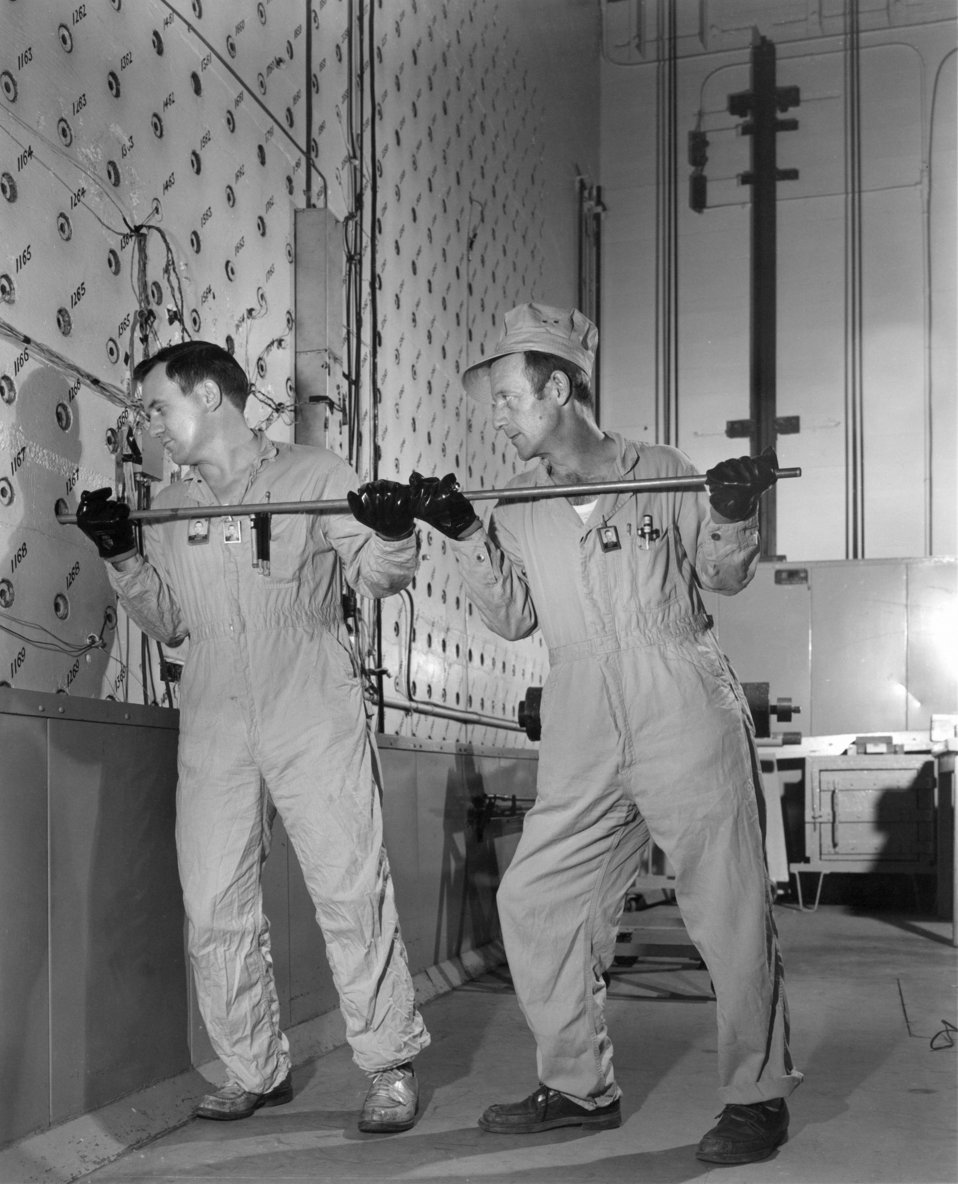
Graphite Reactor East Loading Face Oak Ridge National Lab.

7578-2 DOE photo Ed Westcott Graphite Reactor East Loading Face Oak Ridge National Lab. Oak Ridge Tennessee 1-2-1952